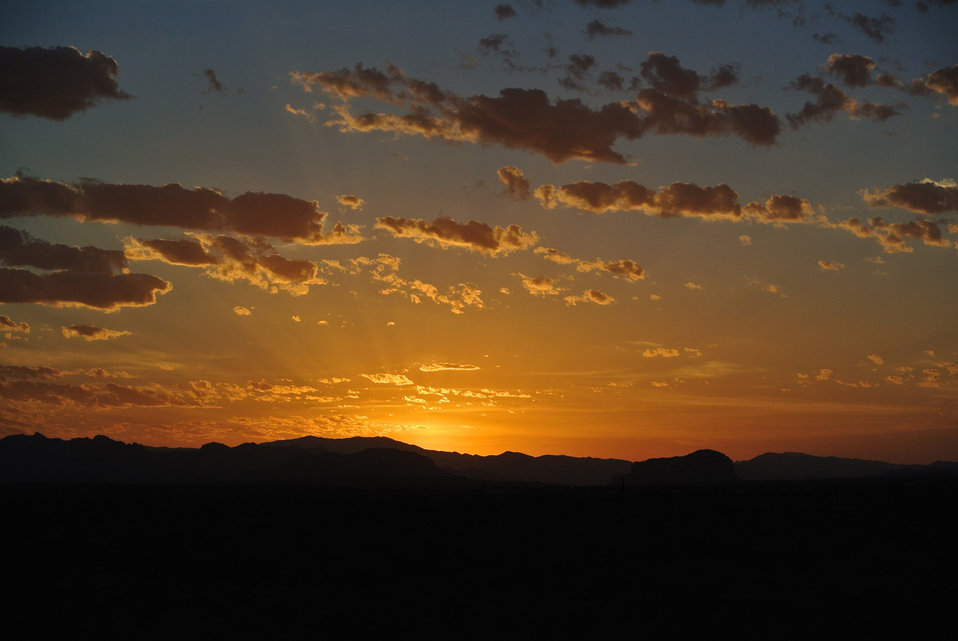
Sunrise 6-24-12 g

Sunrise 6-24-12.